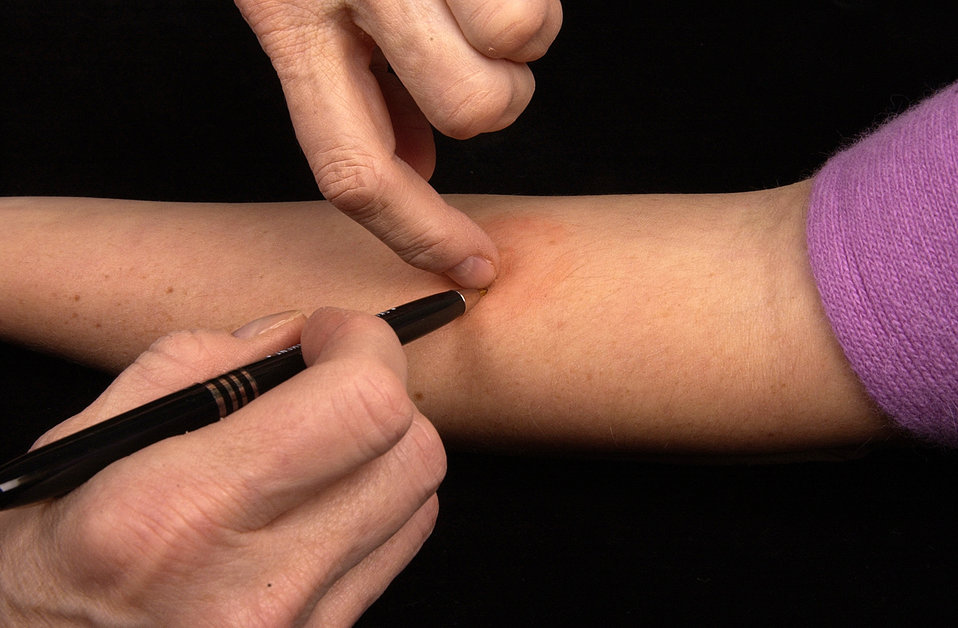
The technician is marking the widest edges of the patient's induration (a hard, dense, raised formation) with a pen for accurate measurement of the Mantoux tuberculin skin test reaction.